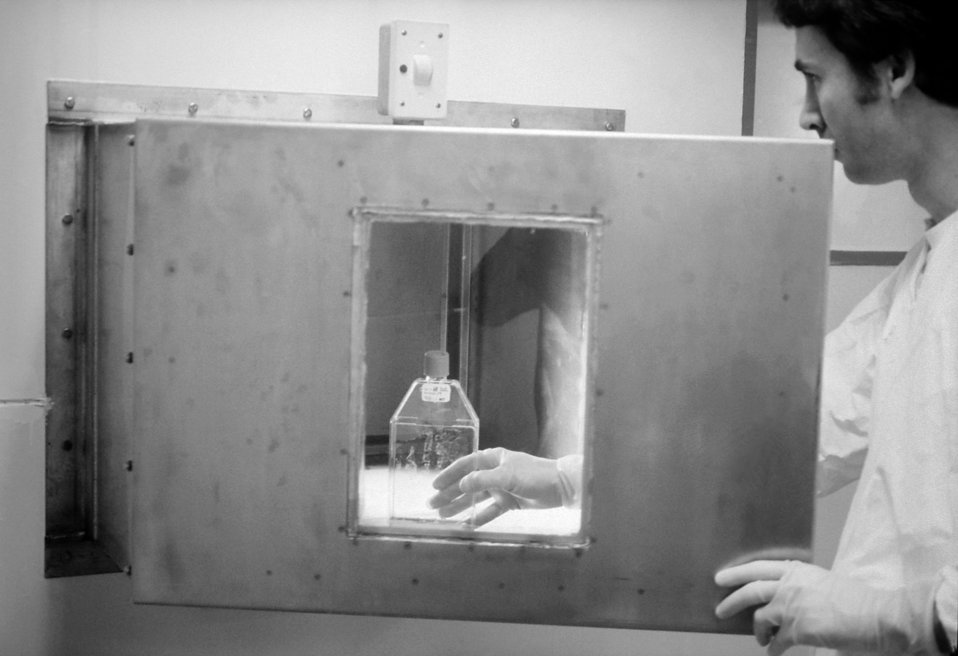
A staged photograph depicting an ultraviolet pass-box in a Maximum Containment lab, 1977.